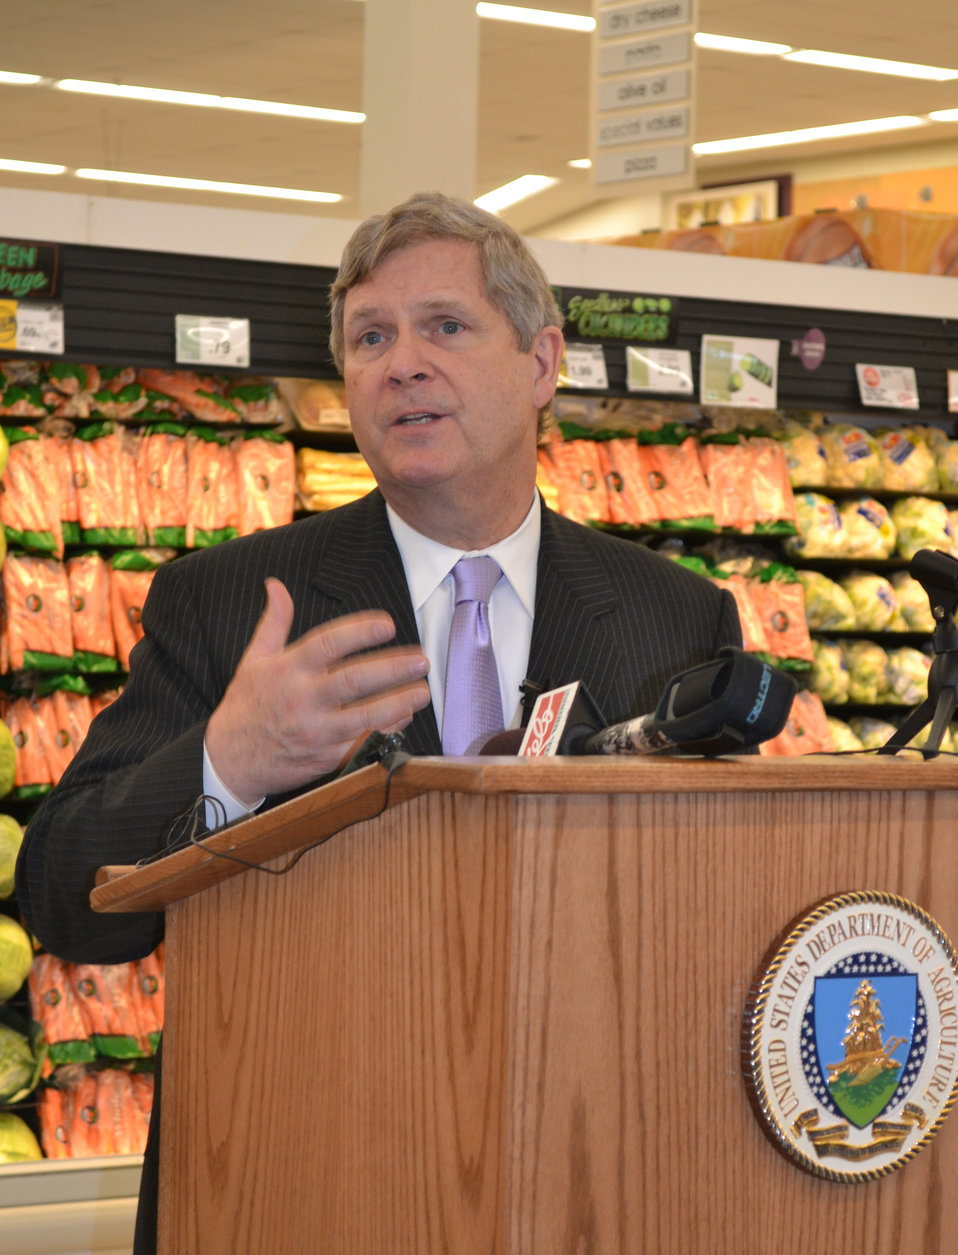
Agriculture Secretary Tom Vilsack visited a Hy-Vee grocery store in Sioux Falls, South Dakota to discuss USDA efforts to promote fruit and vegetable consumption, improve childhood nutrition and prevent obesity to raise a healthier generation of Americans. He announced the results of a pilot program aimed at increasing fruit and vegetable consumption in America’s poorest schools.